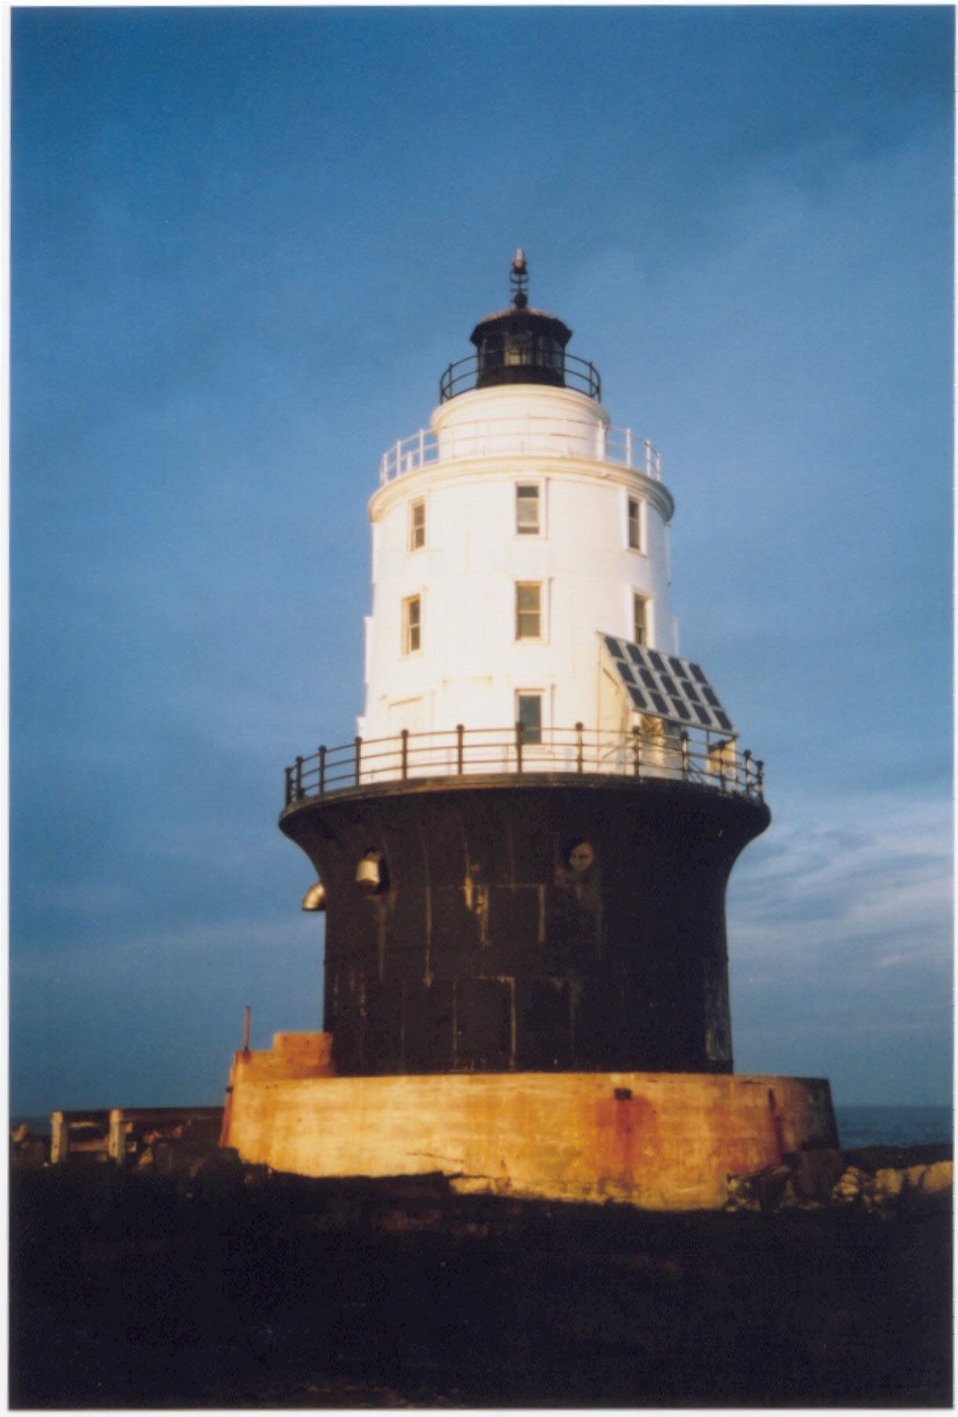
Harbor of Refuge Lighthouse